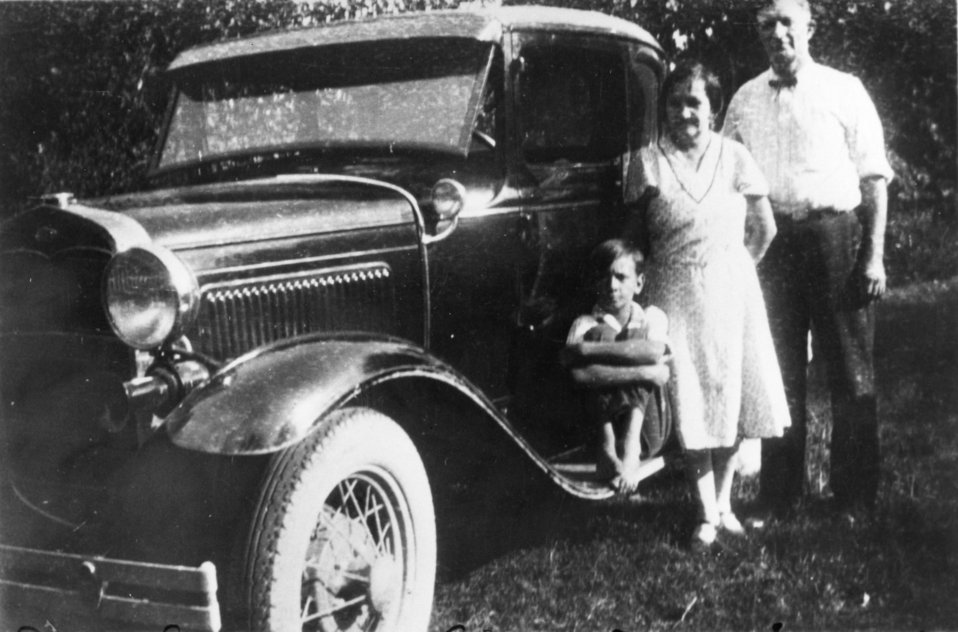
Early settlers at Oak Ridge